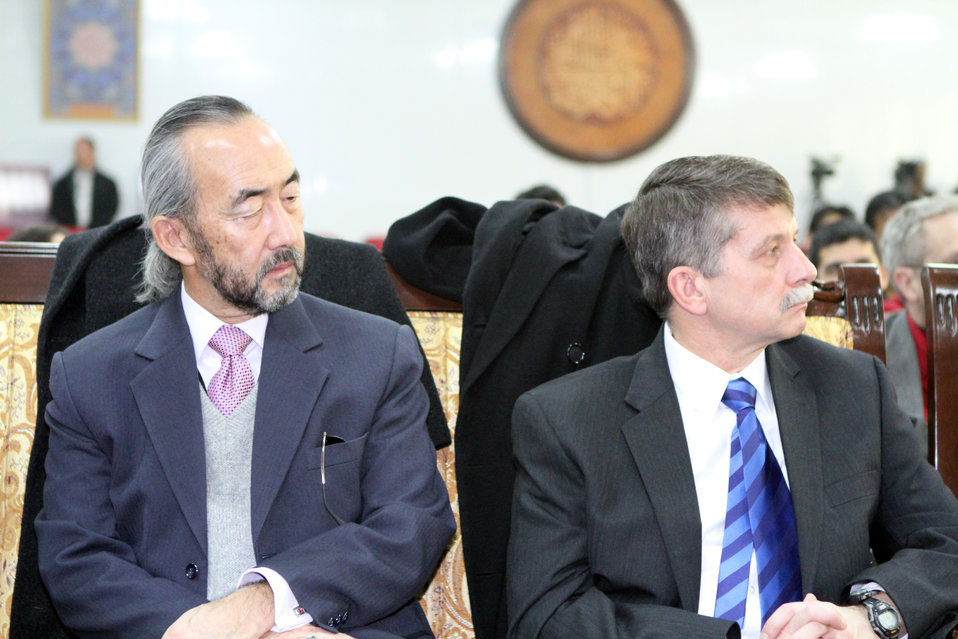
Afghanistan Final National Round of the 2013 Philip C.Jessup International Law Moot Court Competition